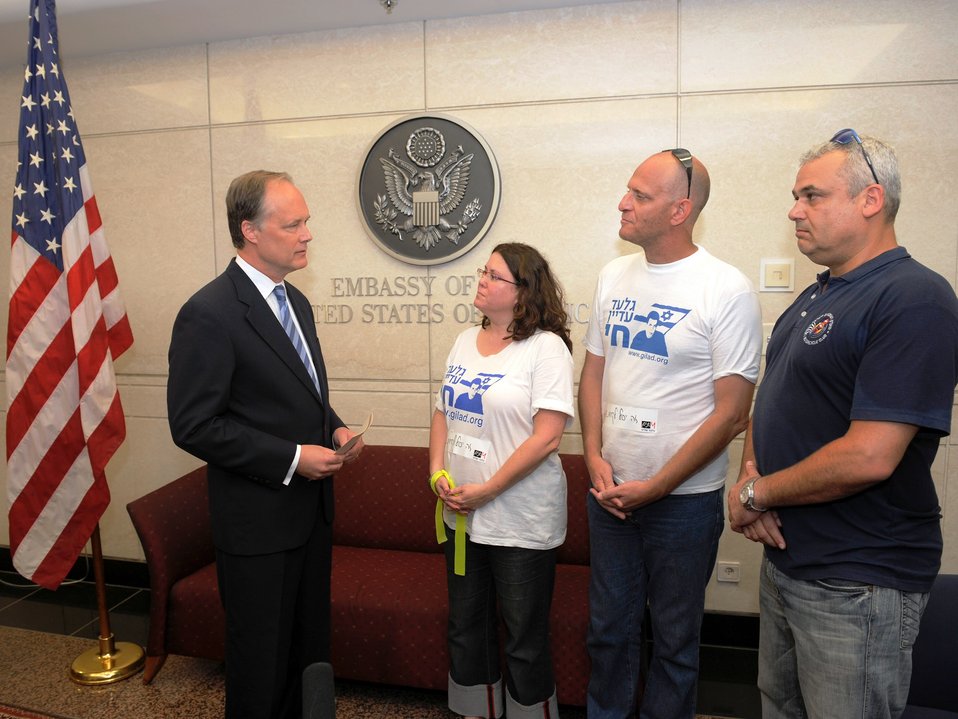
Ambassador Cunningham Speaks With Civil Drafting Chamber Representatives for Gilad Shalit

U.S. Ambassador to Israel James Cunningham speaks with representatives from the Civil Drafting Chamber for Gilad Shalit, (left to right) Inbal Braverman, Kobi Neeman, and Eyal Brandt, on the fourth anniversary of his capture on June 25, 2010, in Tel Aviv, Israel.